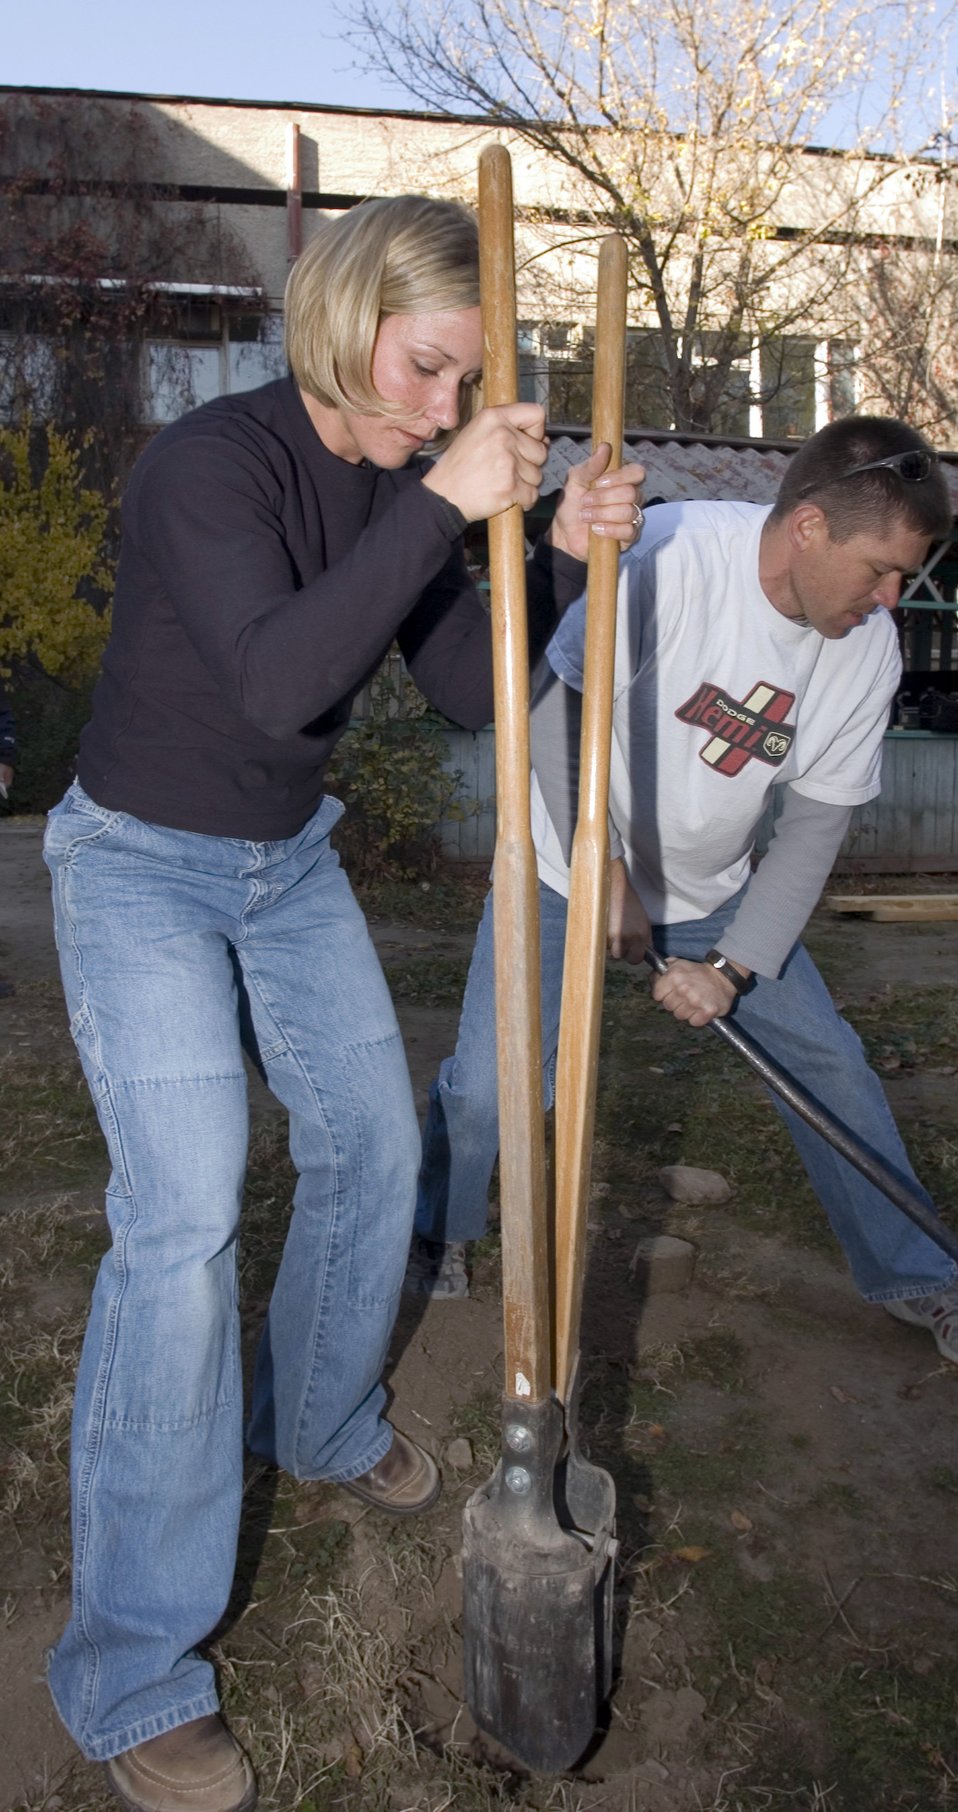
Cancer kids

BISHKEK, Kyrgyzstan (AFPN) -- Staff Sergeants Ann Mitchell and David Ulbrich dig holes to anchor part of the new play fort members of the Manas Air Base Outreach Society donated to a children's cancer center in this city. The Airmen volunteer their day off to do the work at the center. Sergeant Mitchell is a 376th Expeditionary Services Squadron. Sergeant Ulbrich is with the 376th Expeditionary Civil Engineer Squadron.